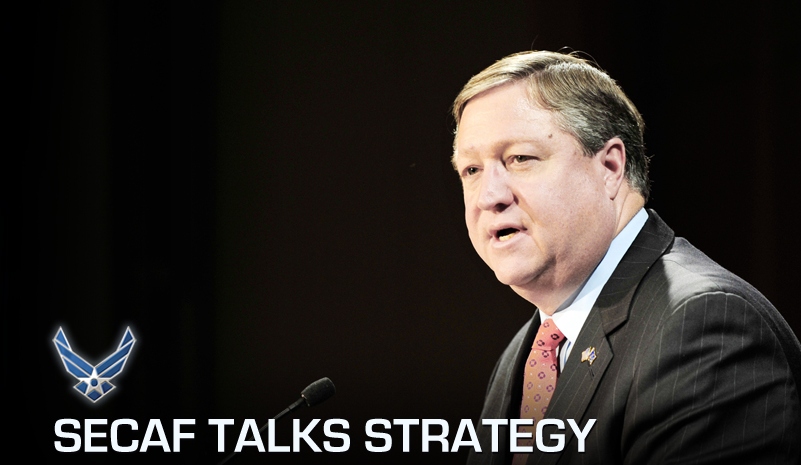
SecAF talks budget